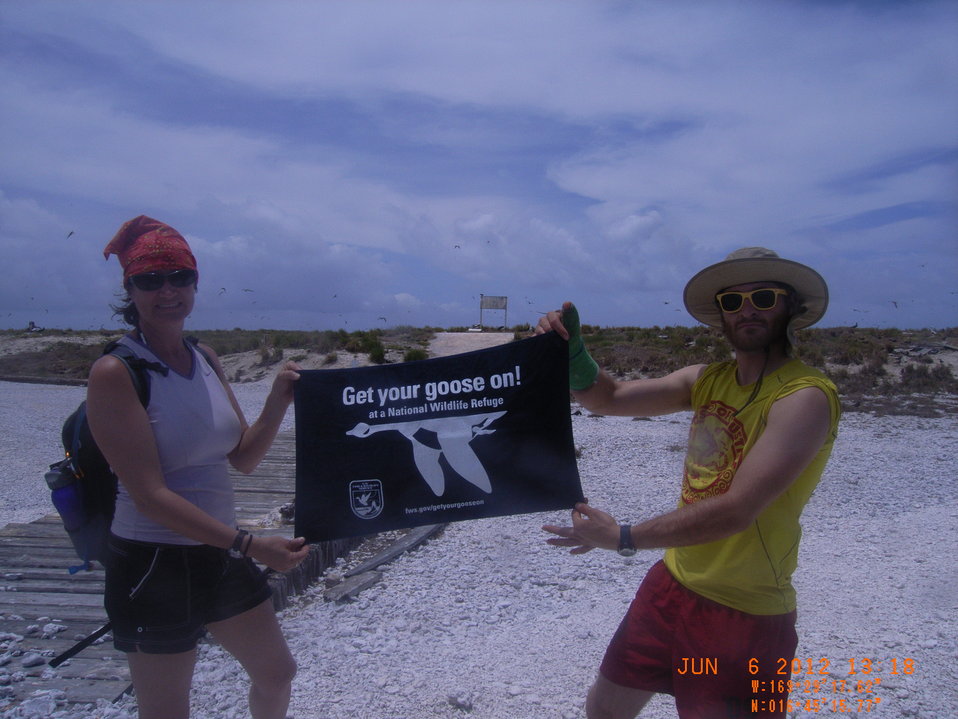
Get Your Goose On! Atoll Style

Kendra Maty and Charlie Parrott after a successful ant survey on East Island, Johnston Atoll NWR.